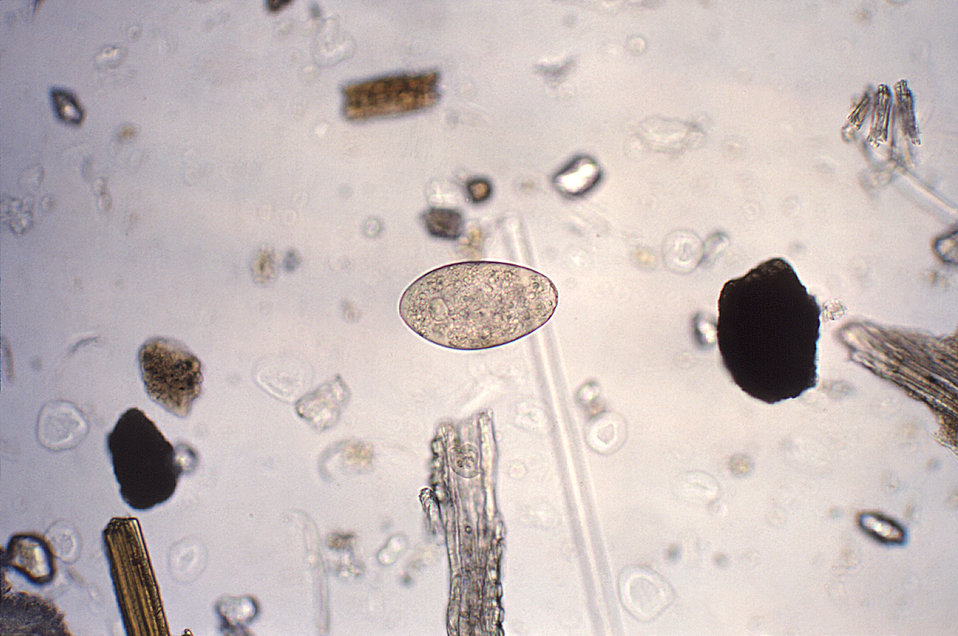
Magnified 128X this photomicrograph revealed the presence of a single trematode, Fasciolopsis buski, egg, which is described as broadly ellipsoidal, operculated and measuring 130�m to 150�m long, by 60 �m to 90�m wide. The eggs are unembryonated when passed in feces. The eggs of F. buski can be difficult to distinguish from Fasciola hepatica, although the abopercular end of the latter often has a roughened or irregular area.